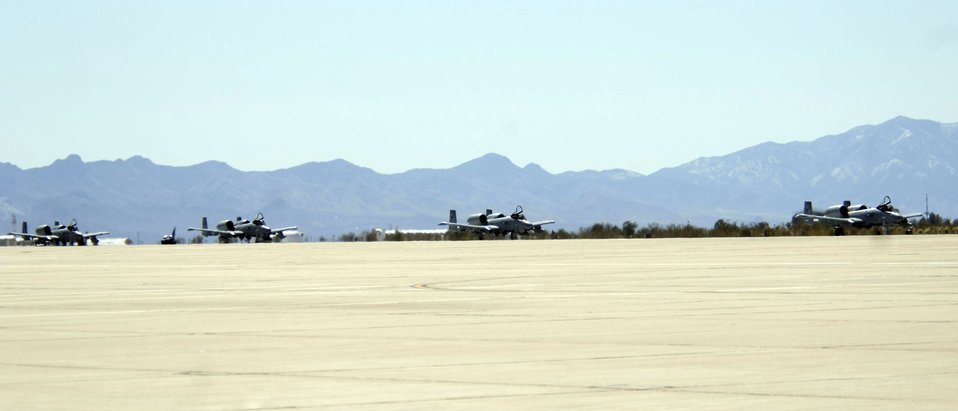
Hawgsmoke 2006

Four A-10 Thunderbolt IIs taxi down the runway as they arrive at Davis-Monthan Air Force Base, Ariz., Wednesday, March 22, 2006, to kick off the beginning of